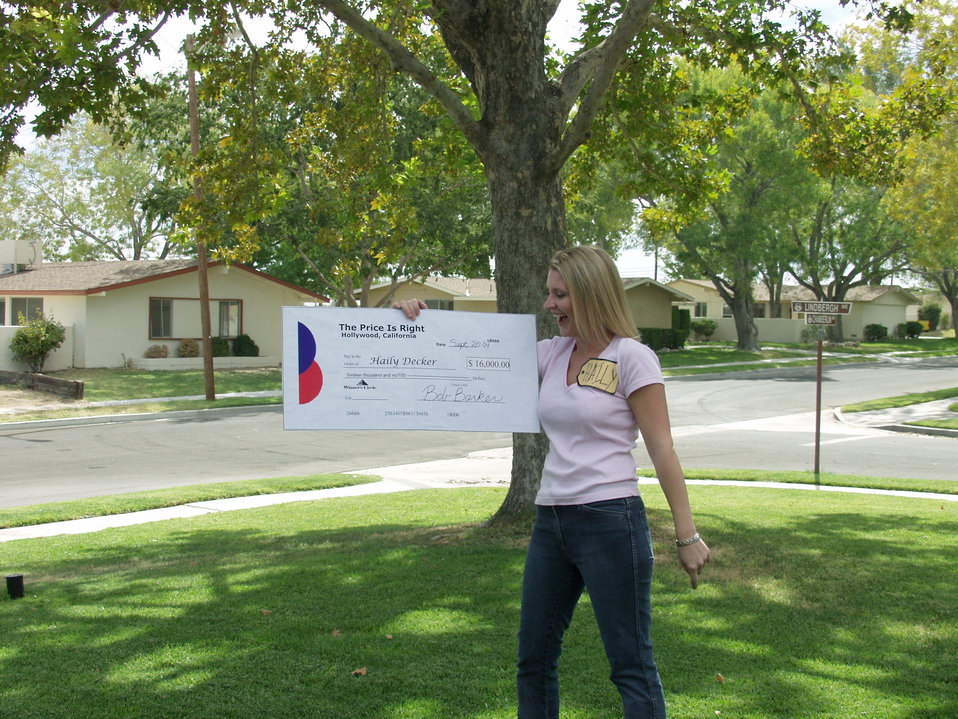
Edwards spouse wins big on

EDWARDS AIR FORCE BASE, Calif. -- Haily Decker holds a mock $16,000 check that was presented to her after winning a prize on the "Price is Right" during an information, tickets and travel trip. Her husband, Capt. Shane Decker, is assigned to the Air Force Operational Test and Evaluation Center's Detachment 5 here.